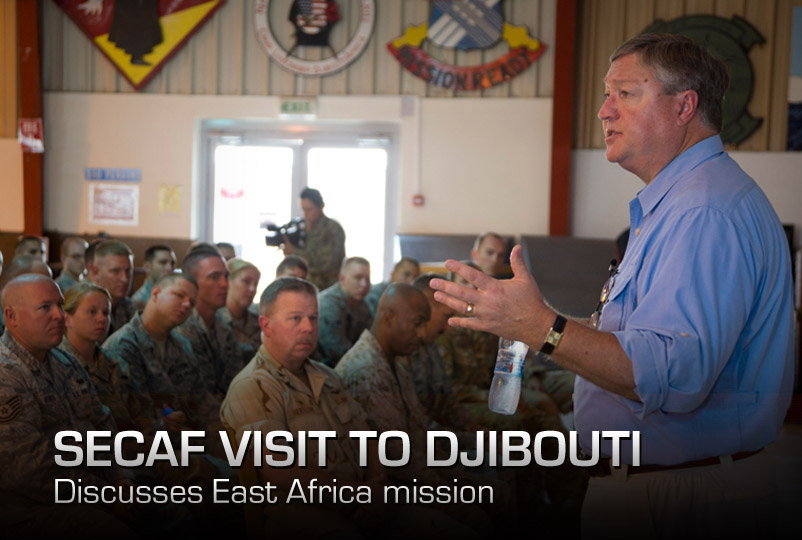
SecAF travels to Djibouti

During his visit to Camp Lemonnier, Djibouti, on Aug. 22, 2012, Secretary of the Air Force Michael Donley talks about the important role the Air Force plays in support of the Combined Joint Task Force - Horn of Africa mission. “Thank you for what you’re doing for the Air Force and our nation,” Donley said. “[To build] partner nation capacity, it takes every Airman doing his or her job.”